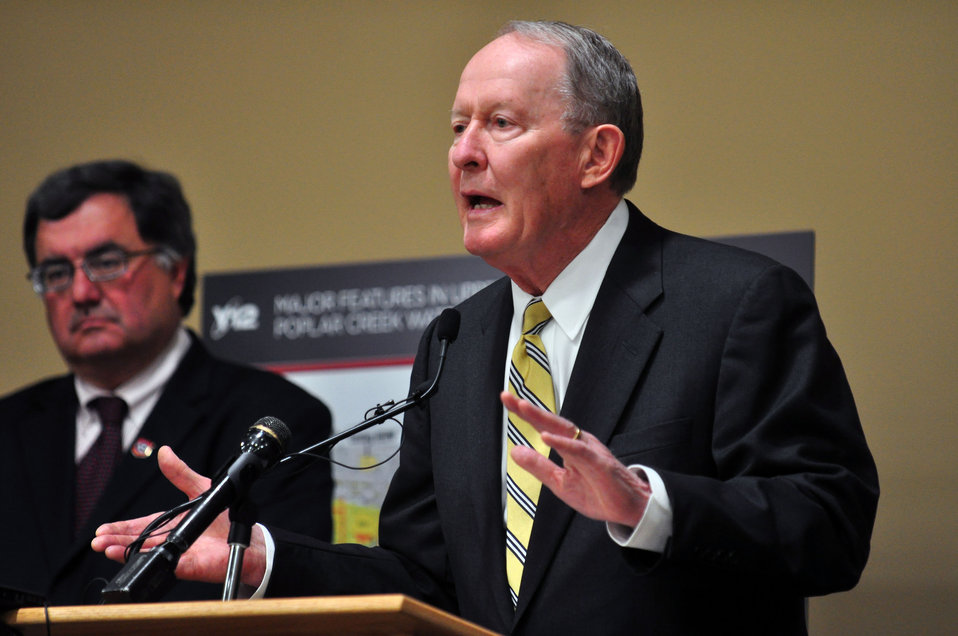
Mercury Cleanup Press Conference Y-12 Oak Ridge Speaking, U.S. Sen. Lamar Alexander (R-Tenn.), with Tennessee Department of Environment and Conservation Commissioner Robert Martineau

13-051 DOE photo Lynn Freeny 5-3-2013 Oak Ridge Tennessee